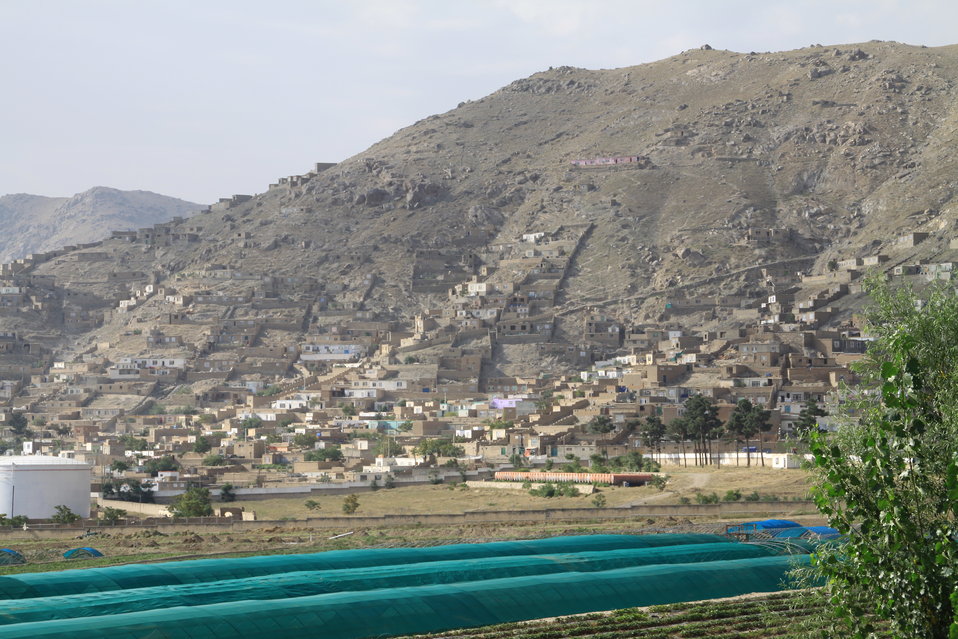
Badam Bagh Farm